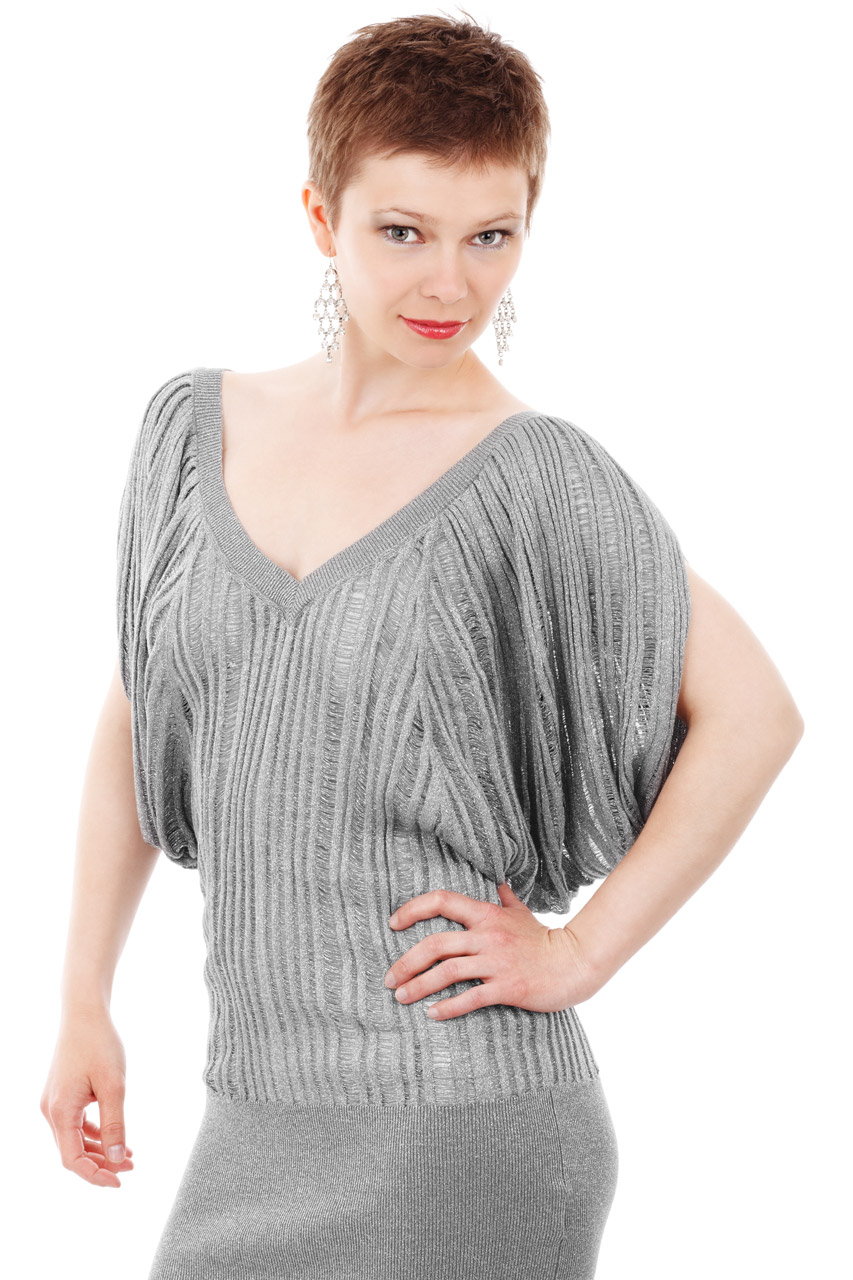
Fashion model pose

Young fashion model is posing isolated on white background..